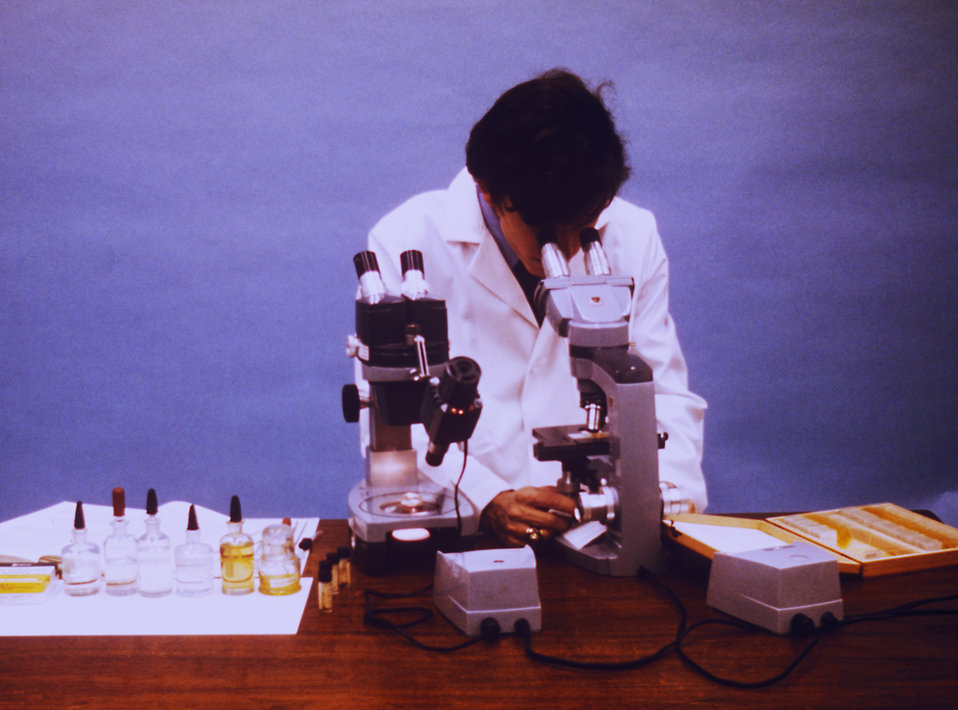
Photograph of an entomologist using two types of microscopes to observe mounted and living mosquito larvae.